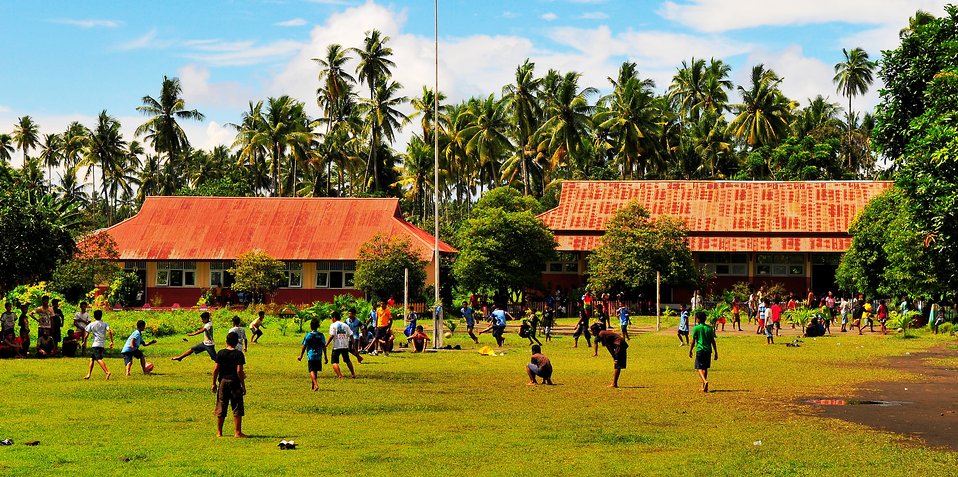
Children play soccer in the courtyard of the Negeri engineering civic action program, conducted by the Military Sealift Command hospital ship USNS Mercy (T-AH 19) during its visit to in Tobelo, Indonesia, on July 13, 2010.. Mercy is deployed for Pacific Partnership 2010, the fifth in a series of annual U.S. Pacific Fleet endeavors conducted in Indonesia as a disaster relief exercise aimed at strengthening regional partnerships.